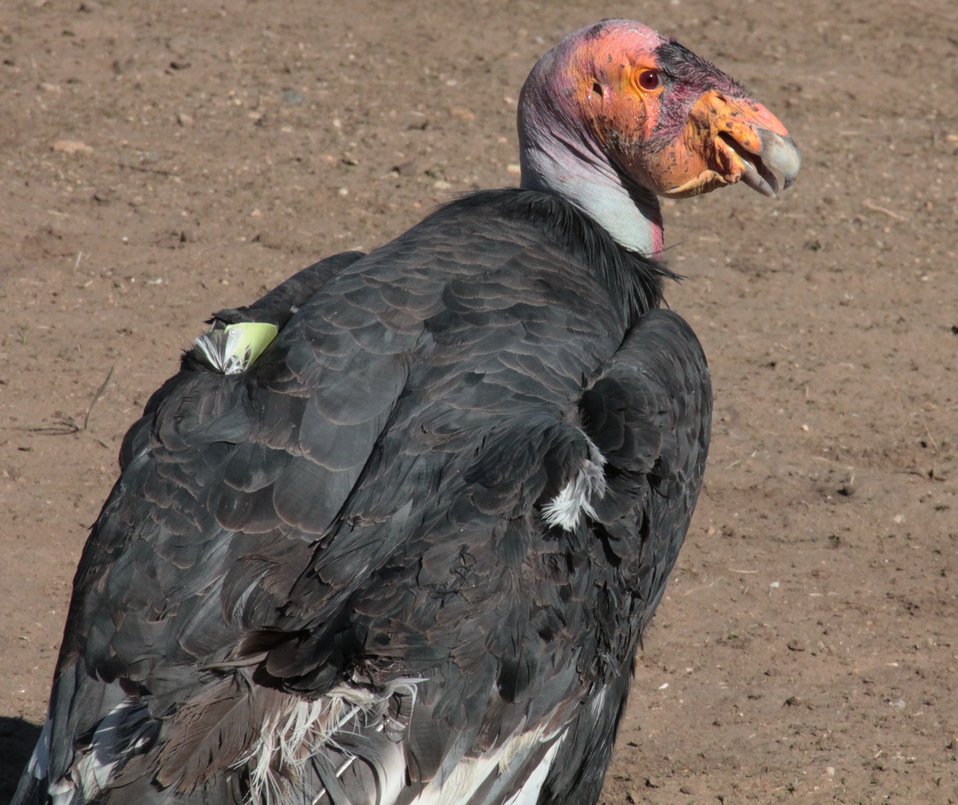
California condor

The adult California Condor is a uniform black, with the exception, especially in the male, of large triangular patches or bands of white on the underside of the wings. It has gray legs and feet, an ivory-colored bill, a frill of black feathers surrounding the base of the neck, and brownish red eyes.

The juvenile is mostly a mottled dark brown with blackish coloration on the head. It has mottled gray instead of white on the underside of its flight feathers.

As an adaptation for hygiene, the condor's head and neck have few feathers, which exposes the skin to the sterilizing effects of dehydration and solar ultraviolet light at high altitudes.

The skin of the head and neck is capable of flushing noticeably in response to emotional state, a capability that can serve as communication between individuals.

The skin color varies from yellowish to a glowing reddish-orange.

Contrary to the usual rule among true birds of prey, the female is slightly smaller than the male. Overall length can range from 109–140 cm (43–55 in) and the wingspan is 2.49–3 m (8.2–9.8 ft). Their weight can range from 7–14.1 kg (15–31 lb), with estimations of average weight ranging from 8–9 kg (18–20 lb).

Wingspans of up to 3.4 m (11 ft) have been reported but no wingspan over 3 m (9.8 ft) has been verified. Most measurements are from birds raised in captivity, so determining if there are any major differences in measurements between wild and captive condors is difficult.

Juvenile:

California Condors have the largest wingspan of any North American bird. They are surpassed in both body length and weight only by the Trumpeter Swan and the introduced Mute Swan. The American White Pelican and Whooping Crane also have longer bodies than the condor. Condors are so large that they can be mistaken for a small, distant airplane, which possibly occurs more often than they are mistaken for other species of bird.

The middle toe of the California Condor's foot is greatly elongated, and the hind one is only slightly developed. The talons of all the toes are straight and blunt, and are thus more adapted to walking than gripping.